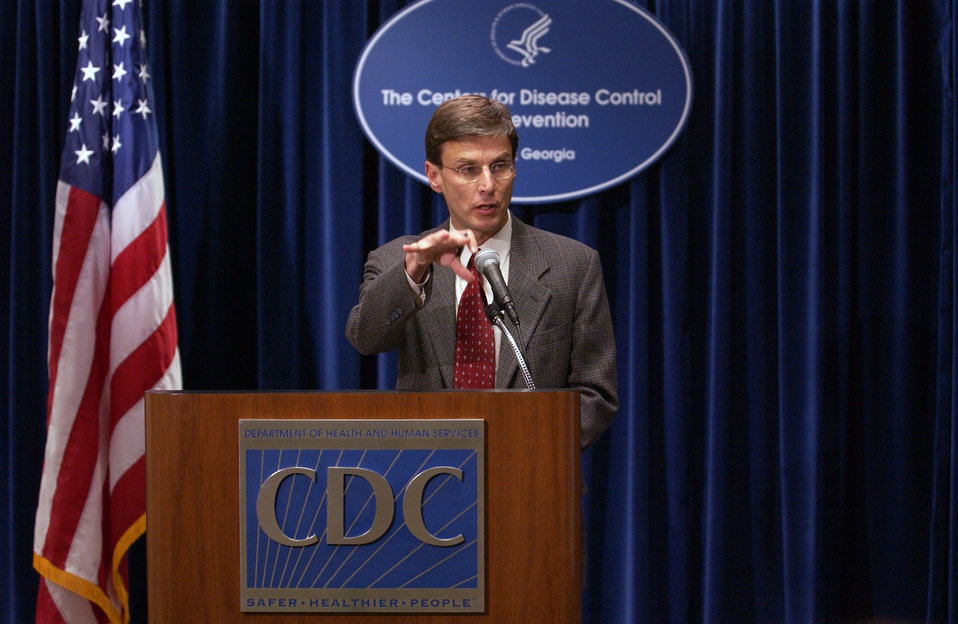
This was a Monkeypox Update press briefing presented by Dr. David Fleming, June 11, 2003.